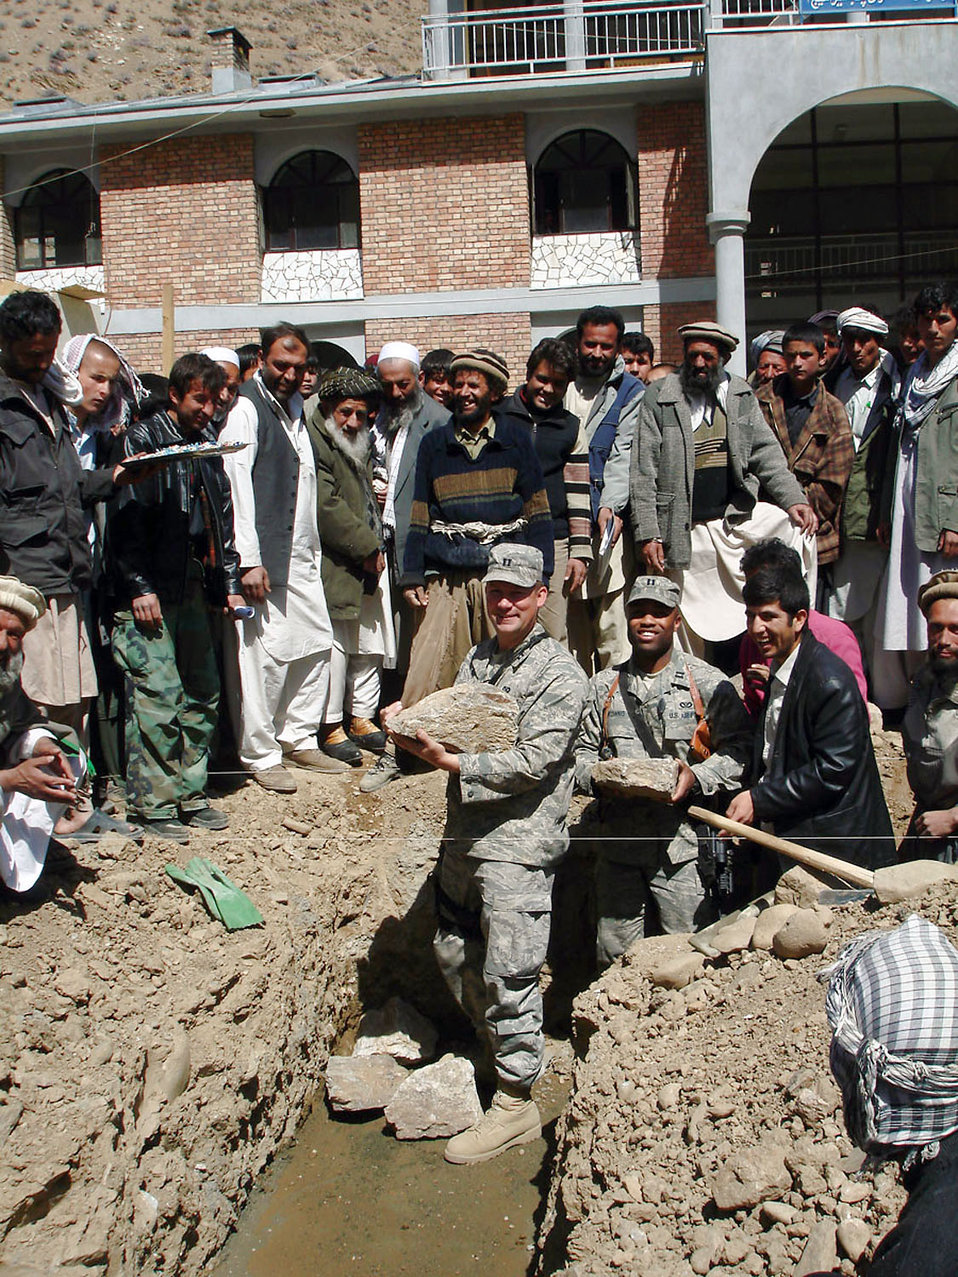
Air Force engineers are outside the wire every day

Capts. Jason Aftanas and Kenneth McGinnis prepare to set stones for the foundation of the Khenj District's Justice Center during a ceremony April 1 in Panjshir, Afghanistan. The captains placed the commemorative stones beside those laid by the District's Chief Justice Mohammad Yousef Qata. The $220,000 building is expected to be complete in January 2009 and furthers one of the key tenets of the PRT mission -- governance. The captains are Panjshir Provincial Reconstruction Team engineers.